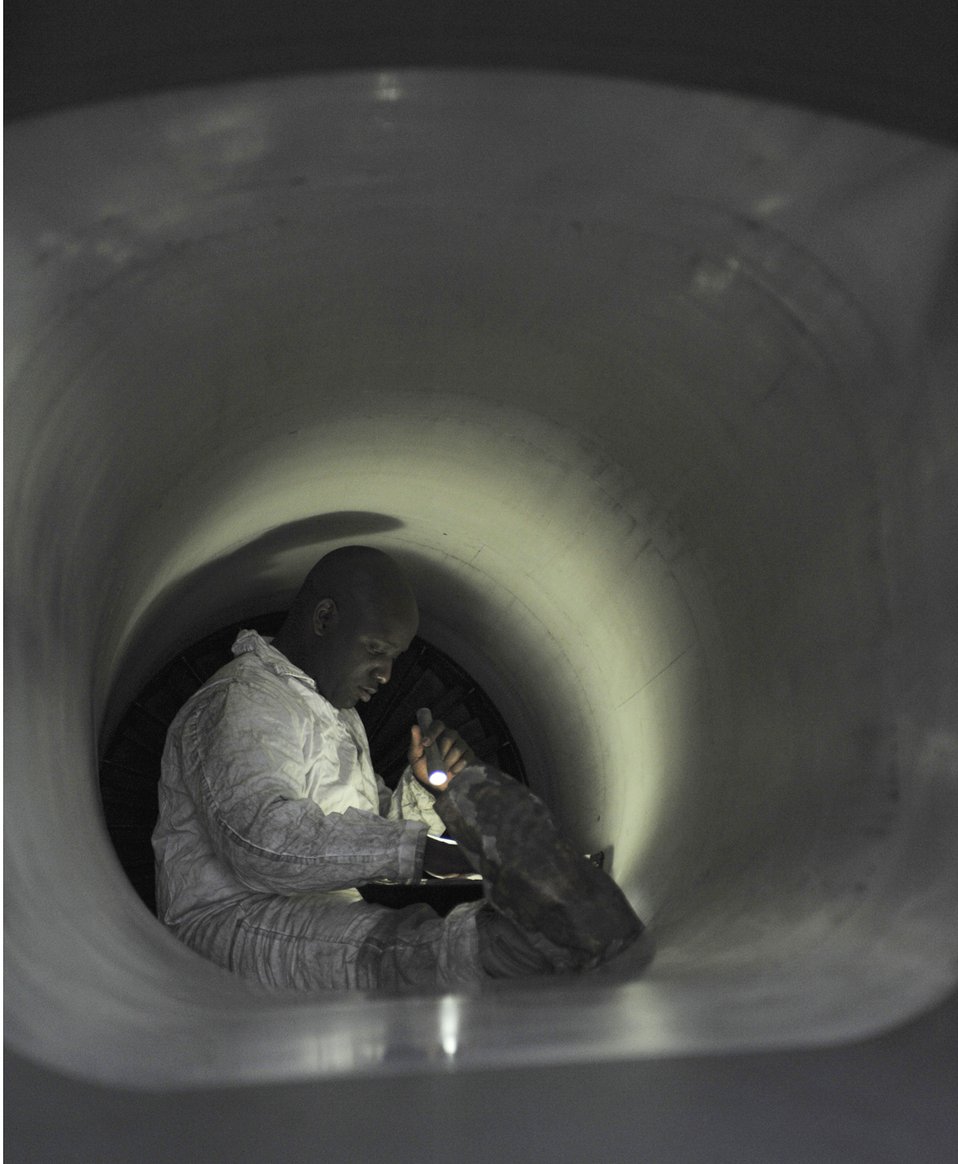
Close quarters

Staff Sgt. Emilo Gordon inspects the inside an F-15 Eagle March 29, 2010, at Elmendorf Air Force Base, Alaska.